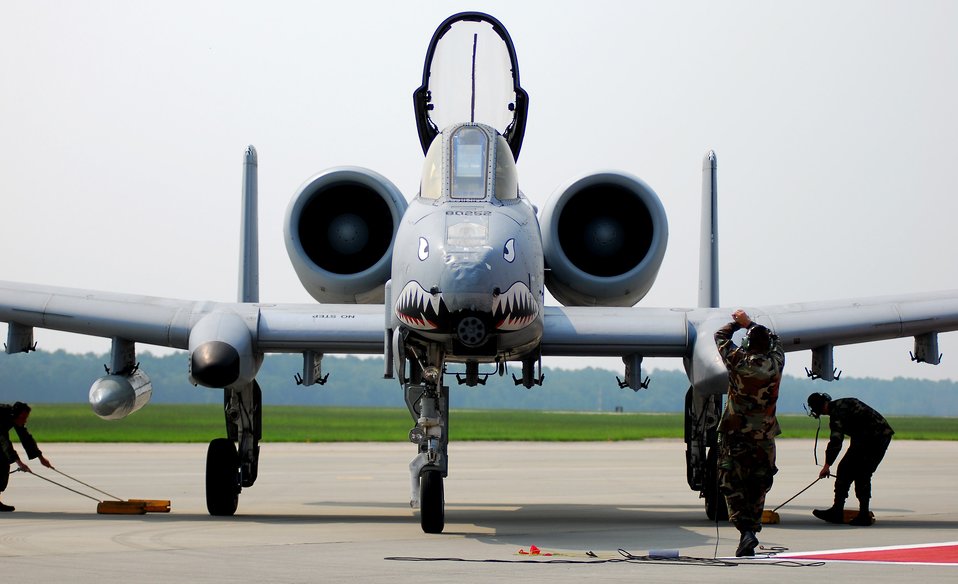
New and improved Thunderbolt IIs arrive at Moody

Maintainers with the 23rd Maintenance Group place the chocks under the first A-10C Thunderbolt II Aug. 7 at Moody Air Force Base, Ga. This aircraft is the first of approximately 50 upgraded A-10Cs moving to the base as a part of a force realignment. The move is expected to be complete in early spring 2008. The upgrades enable the A-10C to deliver the Air Force's latest generation of precision guided munitions and improve the A-10's communications capabilities, allowing the aircraft to share detailed information with ground-based warfighters.